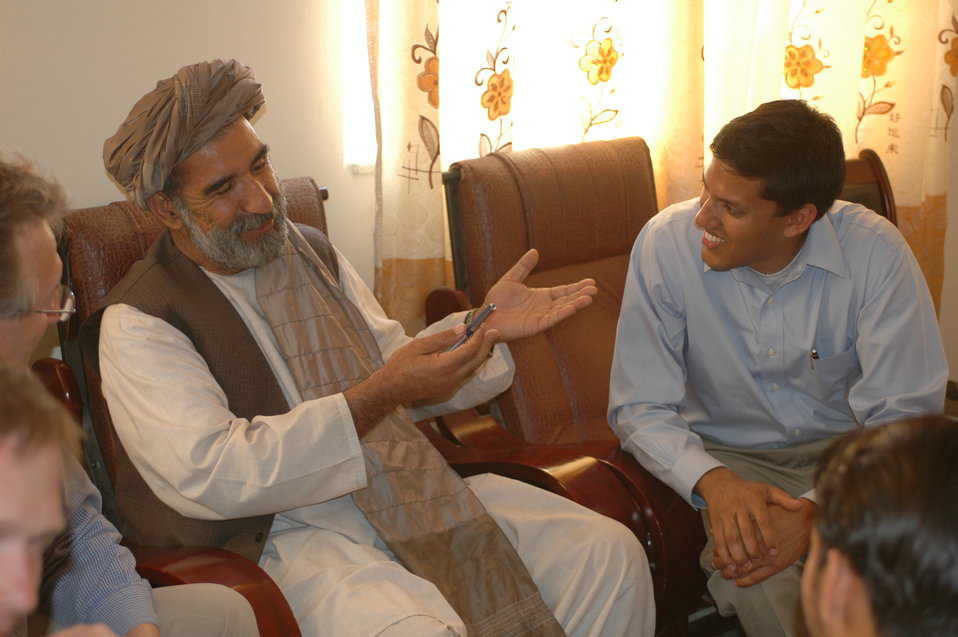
Dr Shah Visits Argandab April 10, 2010